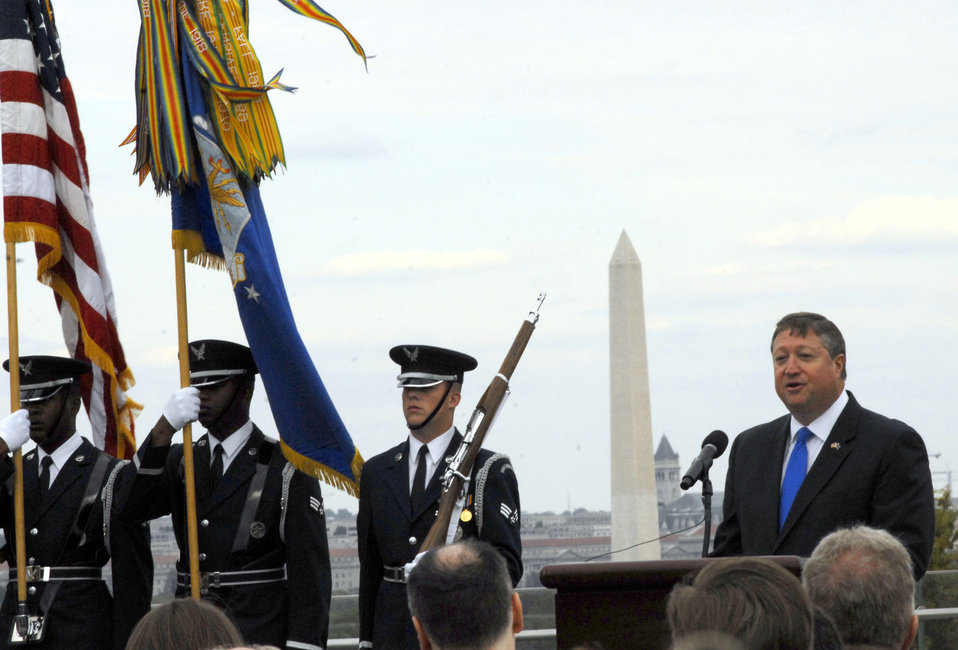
Donley officially sworn in as Secretary of the Air Force

Michael Donley provides a few remarks following his swearing in as the 22nd secretary of the Air Force during a ceremony Oct. 17 at the Air Force Memorial in Arlington, Va.